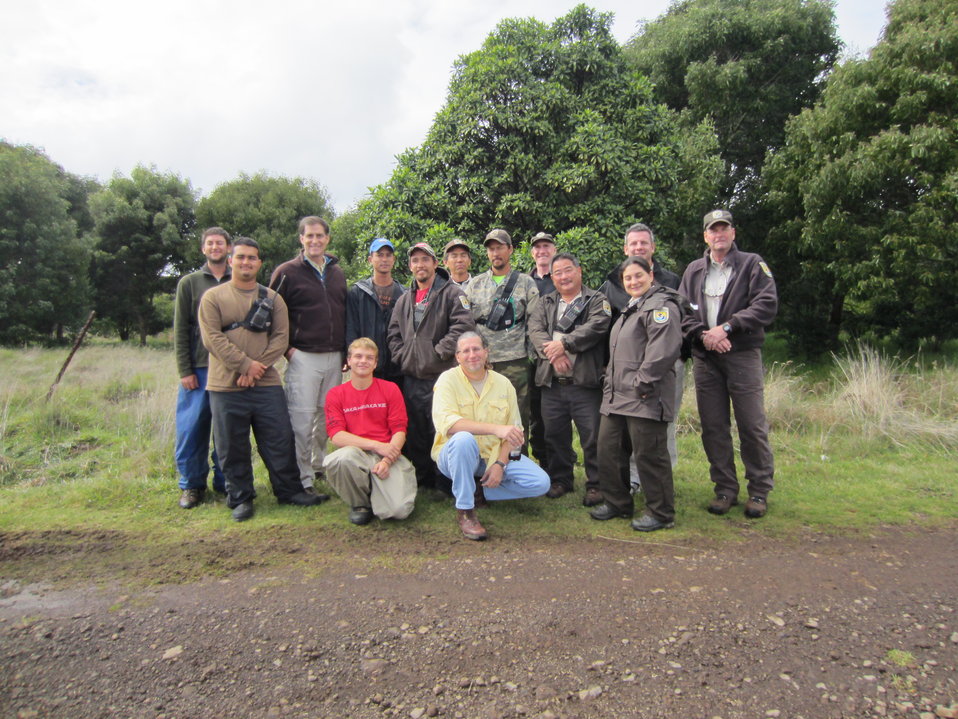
Dan Ashe In Hawaii

Dan meets with staff of Hakalau Forest National Wildlife Refuge and other FWS officials.